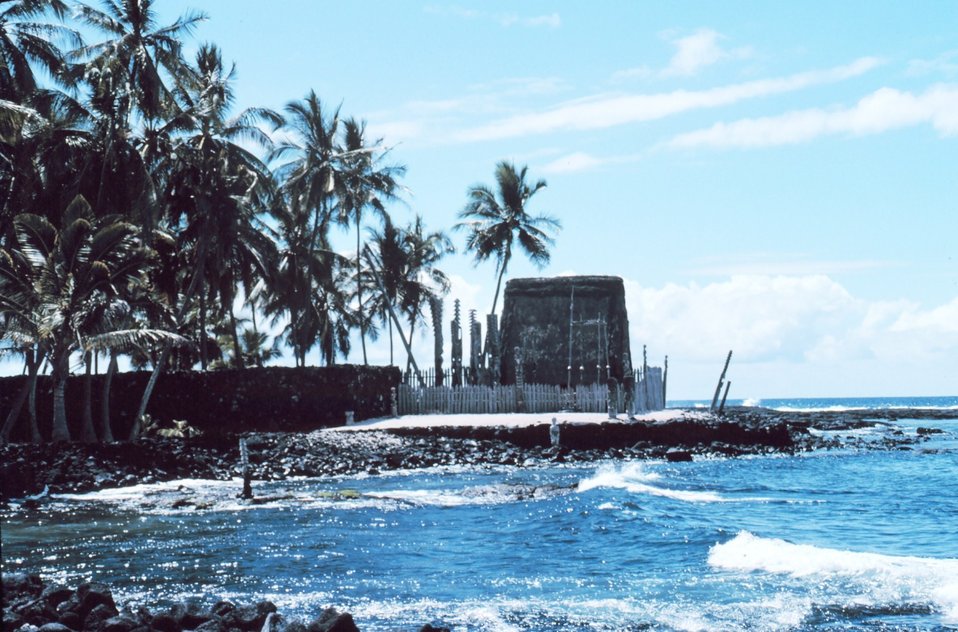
The City of Refuge